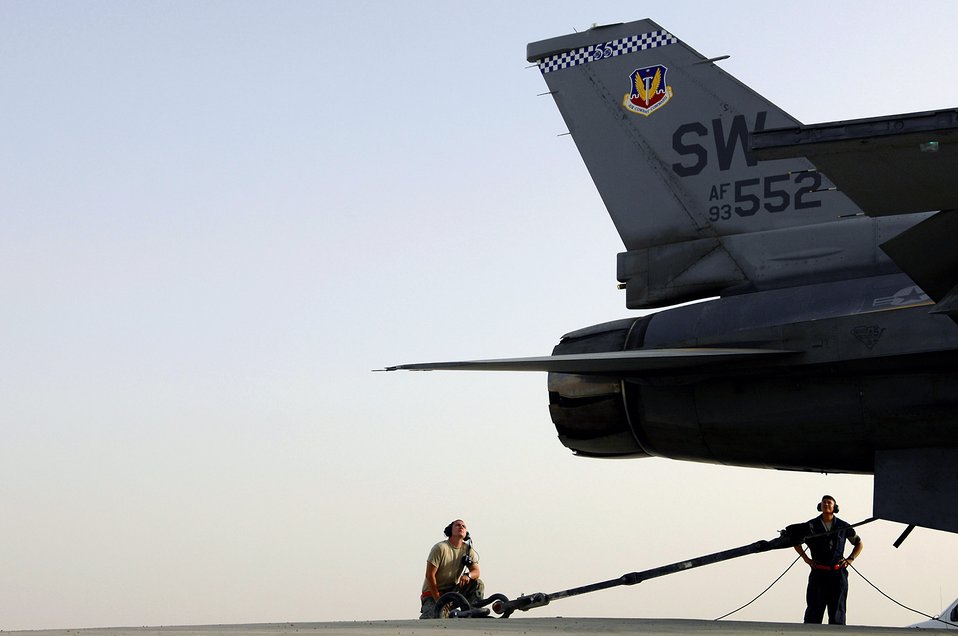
Gentlemen, start your engines!

Senior Airman Graham Willis and Staff Sgt. Ferdinand Brown watch as an F-16 Fighting Falcon idles before going into full afterburner during an engine run up July 16 at Joint Base Balad, Iraq. The mechanics on the ground examine the engine during the run up checking for leaks, smoke or anything else that may fail while the mechanic in the cockpit goes through a checklist of gauges and components. Airman Willis and Sergeant Brown are 77th Aircraft Maintenance Unit engine mechanics deployed from Shaw Air Force Base, S.C.